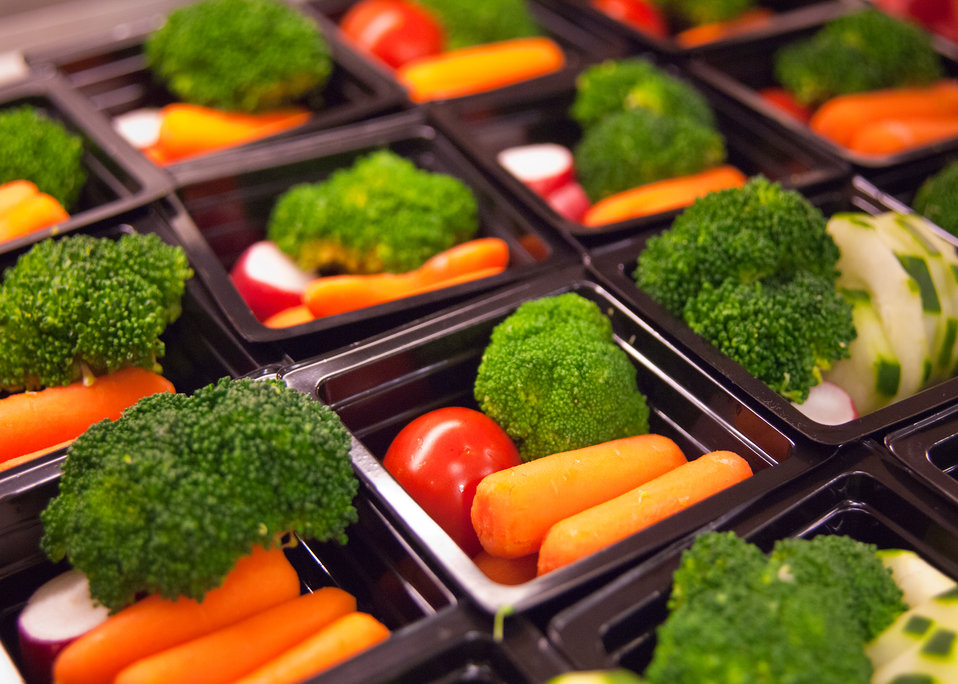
Fresh vegetable cups prepared for the National School Lunch Program at Washington-Lee High School in Arlington, Virginia, on Wednesday, October 19, 2011. The National School Lunch Program is a federally assisted meal program administered by the United States Department of Agriculture, Food and Nutrition Service operating in public, nonprofit private schools and residential child care institutions. It provides nutritionally balanced, low-cost or free lunches to children each school day.